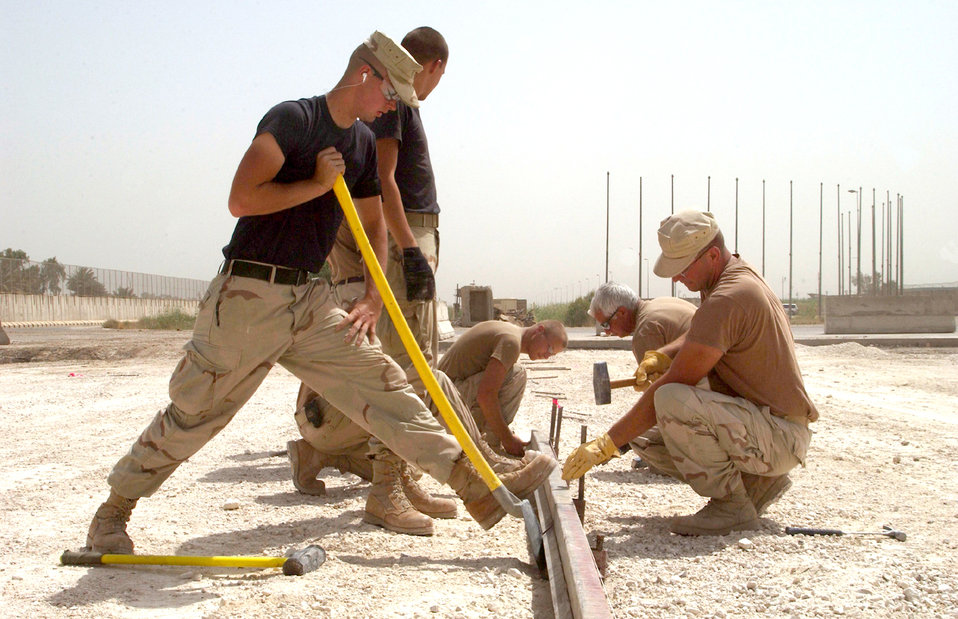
Red Horse engineers build Iraqi future

BAGHDAD, Iraq -- Red Horse engineers prepare concrete forms at the main entry control point for the Baghdad International Airport complex. The project will be used to improve security for civilians and coalition forces in the area.